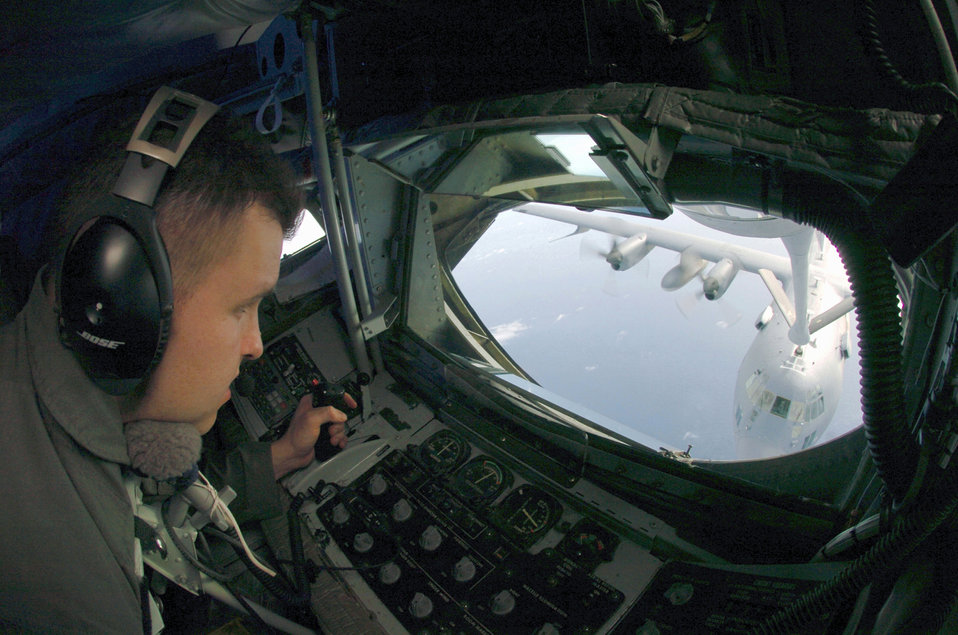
Got gas?

OVER THE PACIFIC OCEAN -- Staff Sgt. Chris Maleski refuels a C-130 Hercules from the 1st Special Operations Squadron at Kadena Air Base, Japan. He is a KC-135 Stratotanker boom operator from the 909th Air Refueling Squadron, also at Kadena. The refueling squadron's aircrews support peacetime operations and all levels of conflict in the Pacific theater.